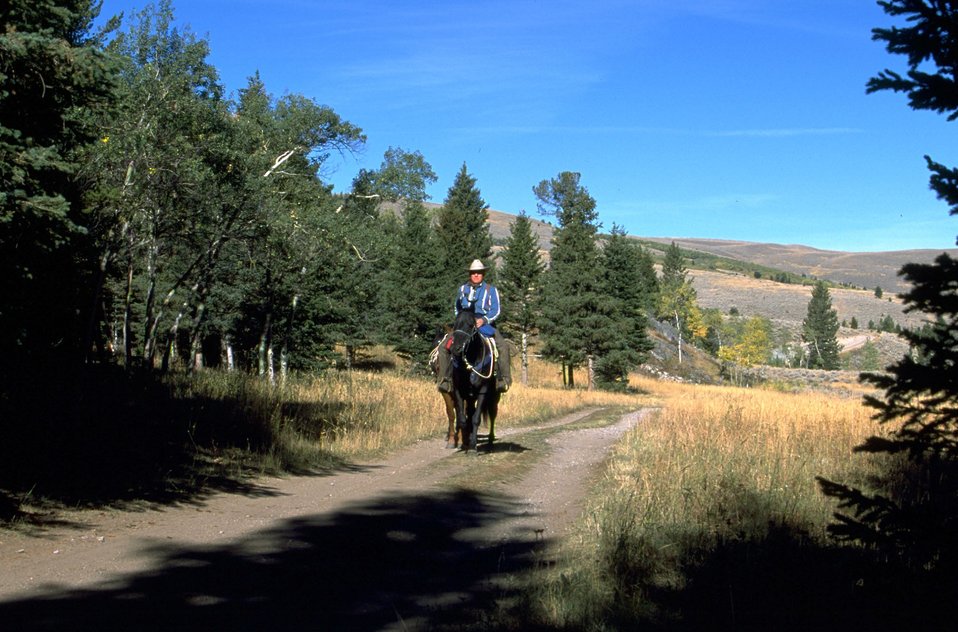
Horse man leading pack horse in the Centennial Mountains